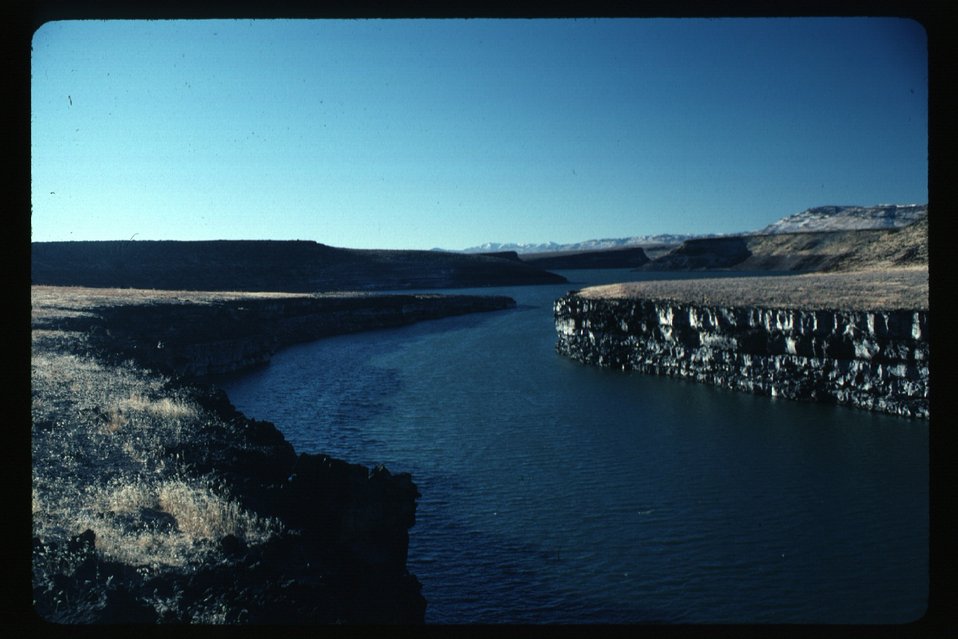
Salmon Falls Reservoir Scenic Burley Field Office USRD Upper Snake River District